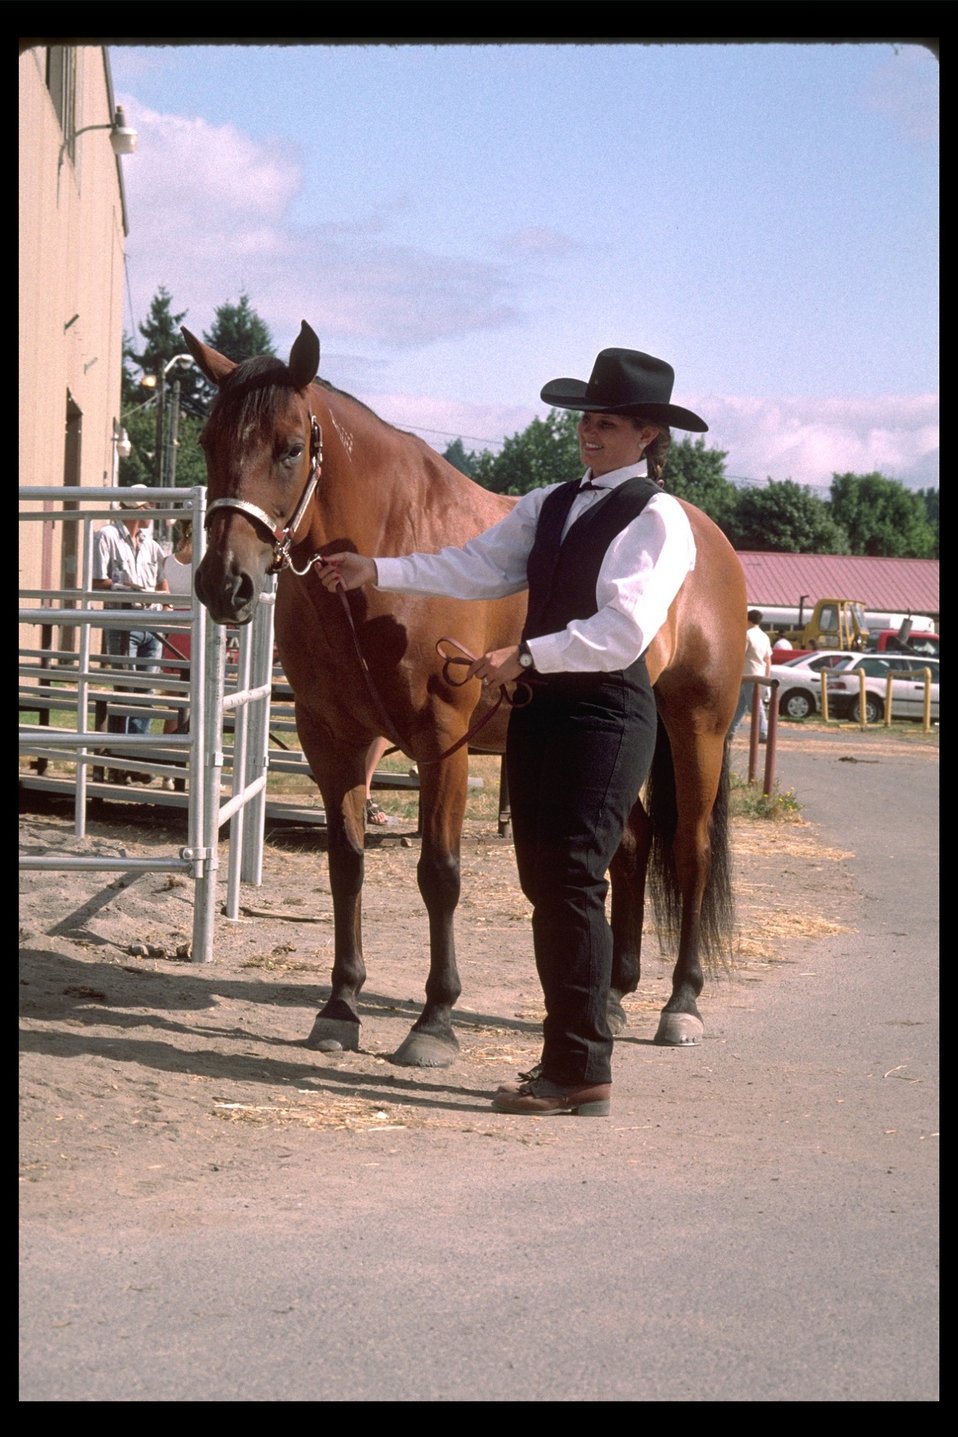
Adopter, Kristen O'Vali, with "Caesar Don't Care" a trading card horse at Longview, Washington adoption and horse show.